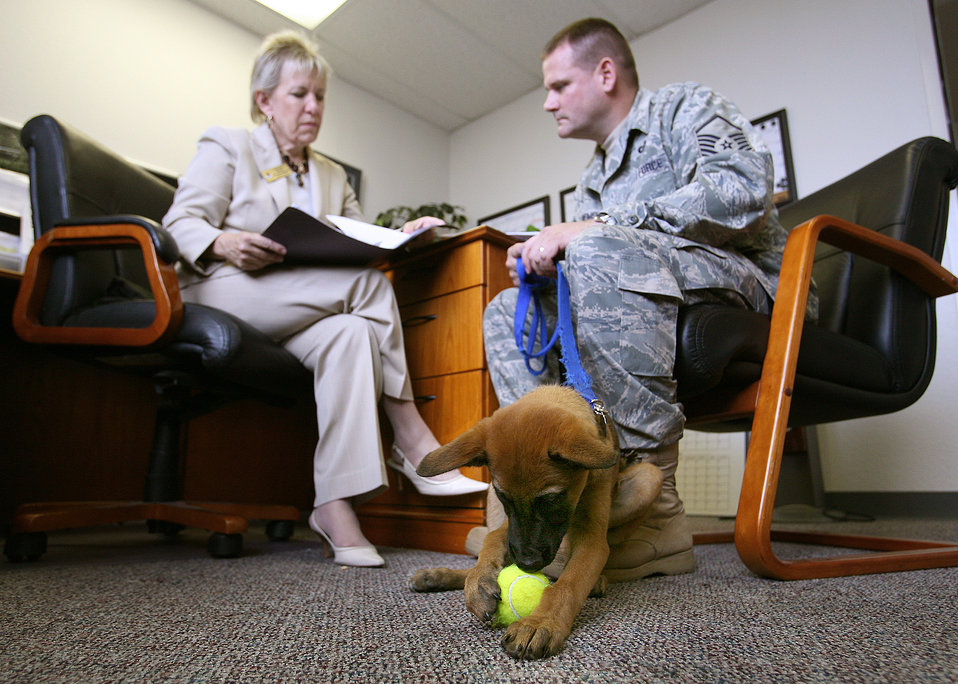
Flight becomes first foster unit to military working puppy

Sharon Witter and Master Sgt. Don Friemel, both with the 37th Force Support Squadron, go over paperwork while Aamee plays with a tennis ball. The Airman and Family Readiness Flight is fostering Aamee, exposing her to a variety of social settings, and caring for her until she is ready for military working dog training.